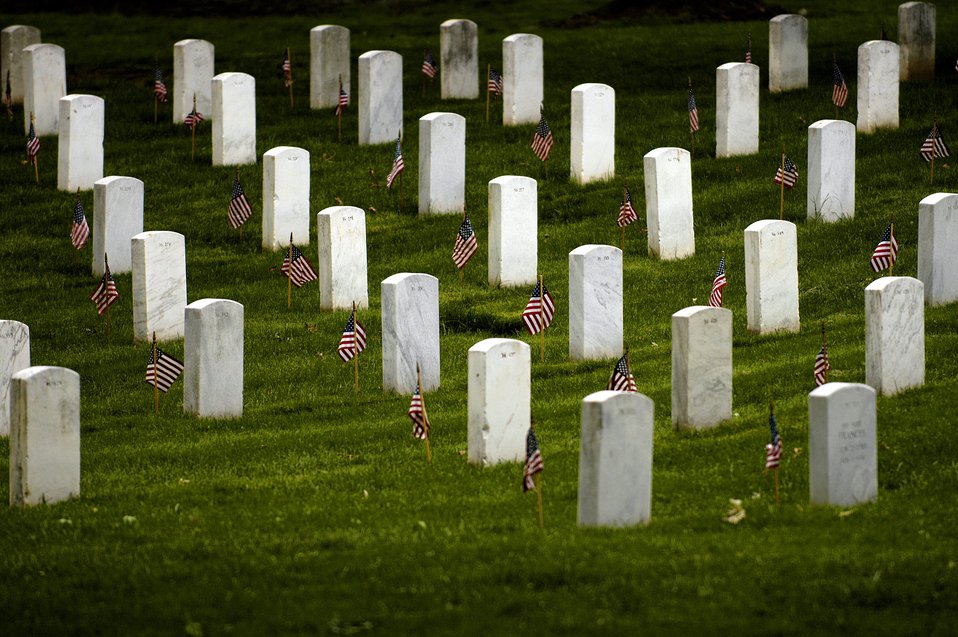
Arlington 'Flags In' tribute begins Memorial Day commemoration

Servicemembers place 265,000 miniature flags at every grave at Arlington National Cemetery during Flags In. The Flags In tradition dates back to 1948 and begins the annual Memorial Day tribute.